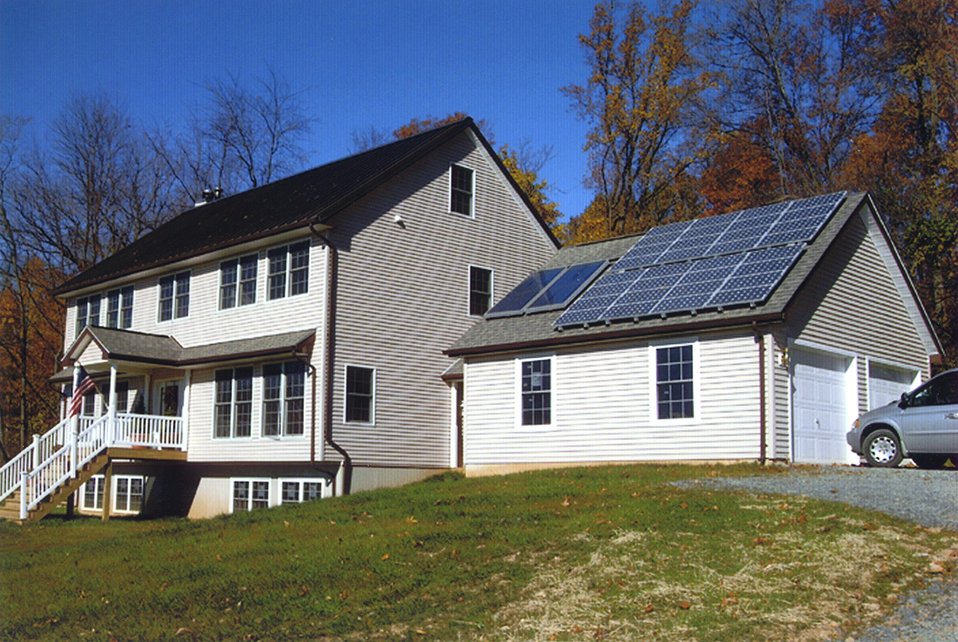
SOLAR PATRIOT HOUSE SEEN FROM THE SIDE, SHOWING PHOTOVOLTAIC PANELS ON THE GARAGE ROOF.

THE SOLAR PATRIOT, A MODULAR HOME DISPLAYED ON THE NATIONAL MALL IN APRIL, 2001 AS PART OF THE SOLAR FORUM 2001, WAS PERMANENTLY INSTALLED IN NORTHERN VIRGINIA. THIS ZERO ENERGY HOME PRODUCES ALL THE ENERGY IT NEEDS FEATURING PHOTOVOLTAIC SYSTEMS, PASSIVE SOLAR DESIGNS, GEOTHERMAL HEAT PUMP, COMPACT FLUORESCENT LIGHTING AND HIGH EFFICIENCY APPLIANCES. IT IS CONNECTED TO THE ELECTRICITY GRID, BUT HAS THE CAPABILITY TO OPERATE AT LEAST 24 HOURS WITHOUT ELECTRICITY FROM THE UTILITY.